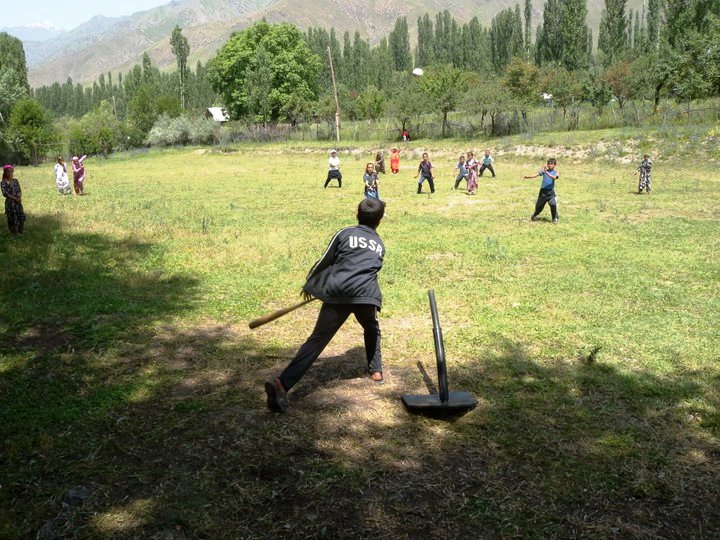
Tajik youth play baseball at Camp America, a U.S. Embassy Dushanbe-supported summer camp, in Hoyt, Tajikistan, in July 2010.